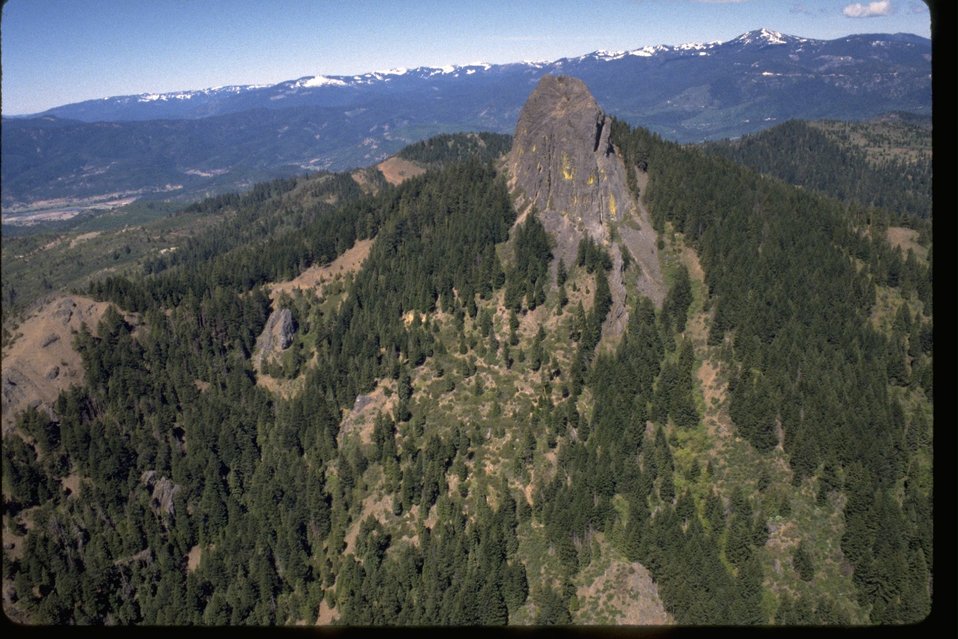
Scenic shot of Pilot Rock.